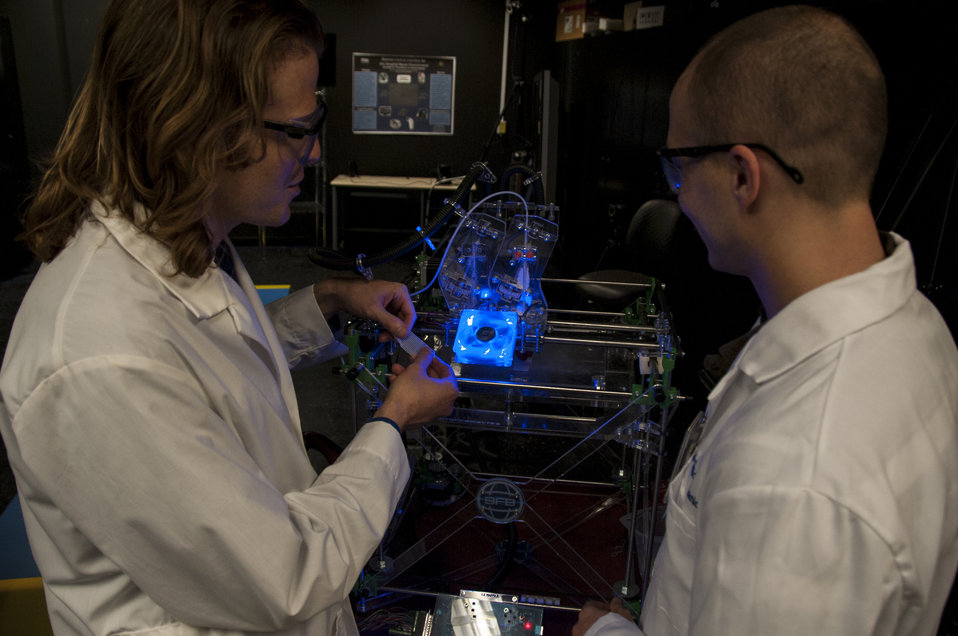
3-D Printing at FDA (8242)

Research engineers James Coburn (left) and Matthew DiPrima use this 3-D printer in their work at FDA. 3-D printing—the process of making a three-dimensional solid object of virtually any shape from a digital model—is spurring innovation in manufacturing, dramatically reducing the time required to design new products and allowing designs to be built that were not possible before. At FDA, we’re using it to expand both our research and our review of new and innovative medical products. To learn more, read this FDA Voice blog post:

• FDA Goes 3-D